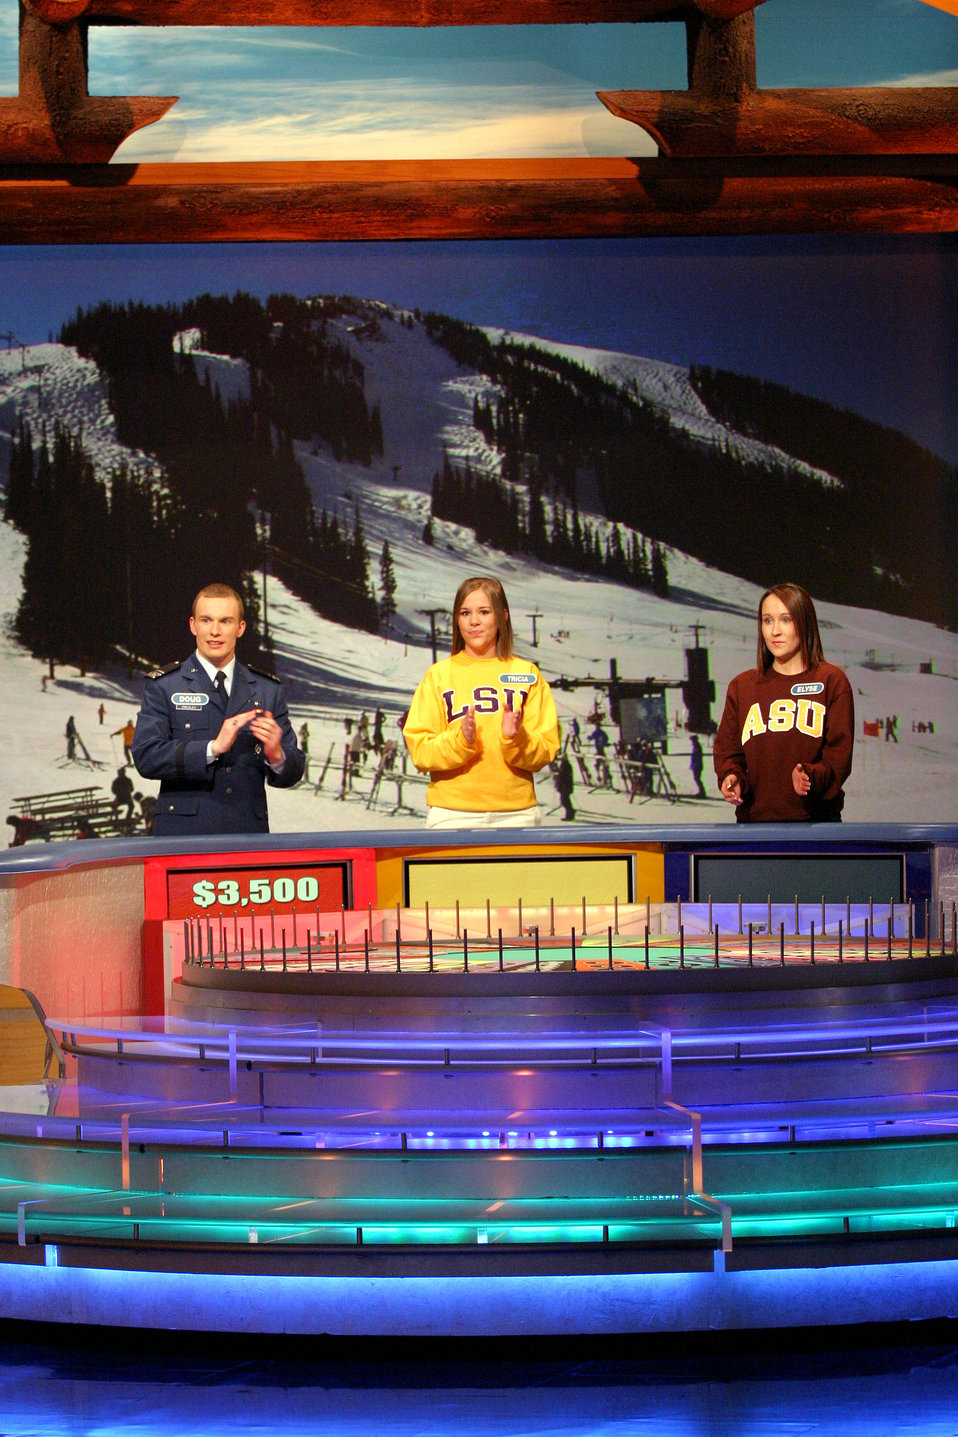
Academy cadets spin Wheel of Fortune

Air Force Academy Cadet 1st Class Doug Presley racks up points during his Wheel of Fortune taping March 25. Cadet Presley will appear on the show that airs May 15 during Wheel of Fortune's College Week. Cadet Presley is an astronautical engineering major. Cadet 2nd Class Casey Probst (not pictured) will be on the show that airs May 18.